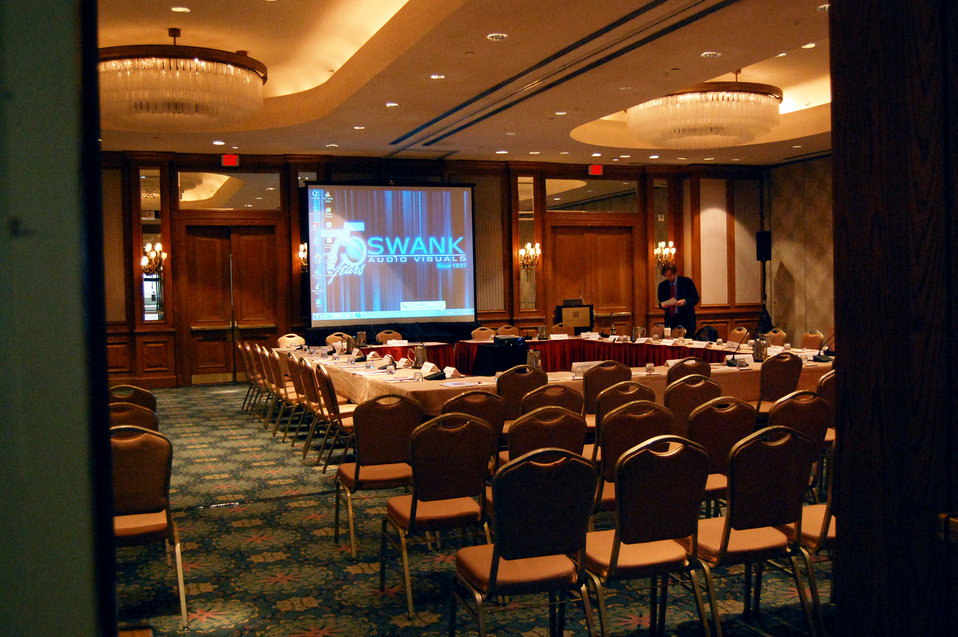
PACHA conf001